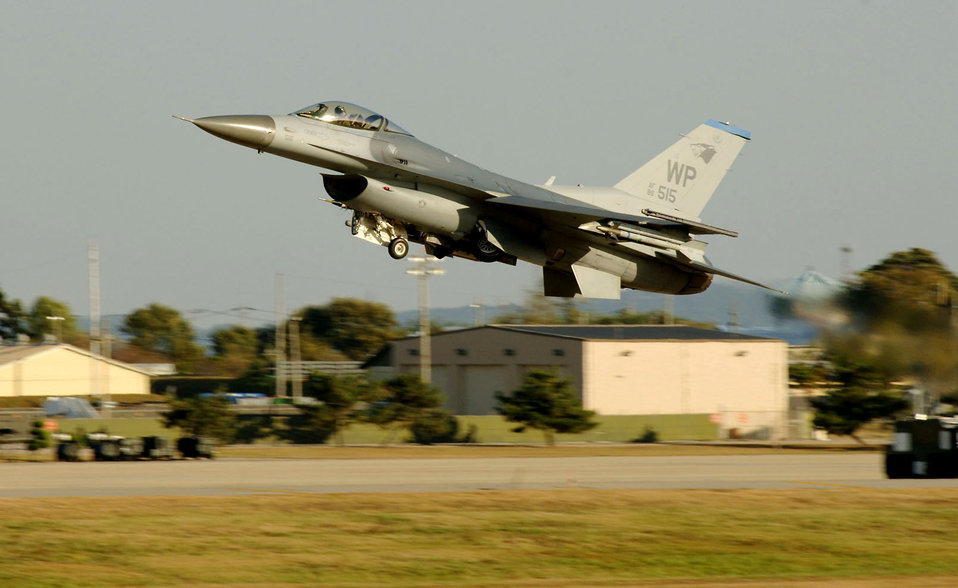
Kunsan Air Base maintains readiness

An F-16 Fighting Falcon takes off from a runway at Kunsan Air Base, South Korea. Aircraft are always at the ready, flying training missions around the clock to ensure total readiness.